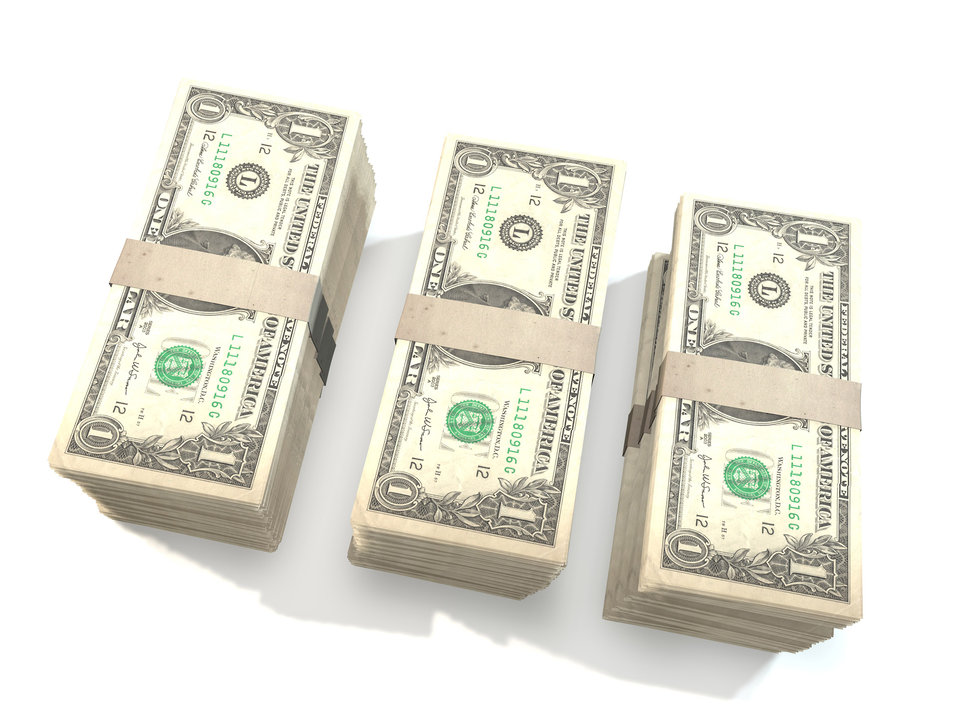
Dollars

U.s. dollars.